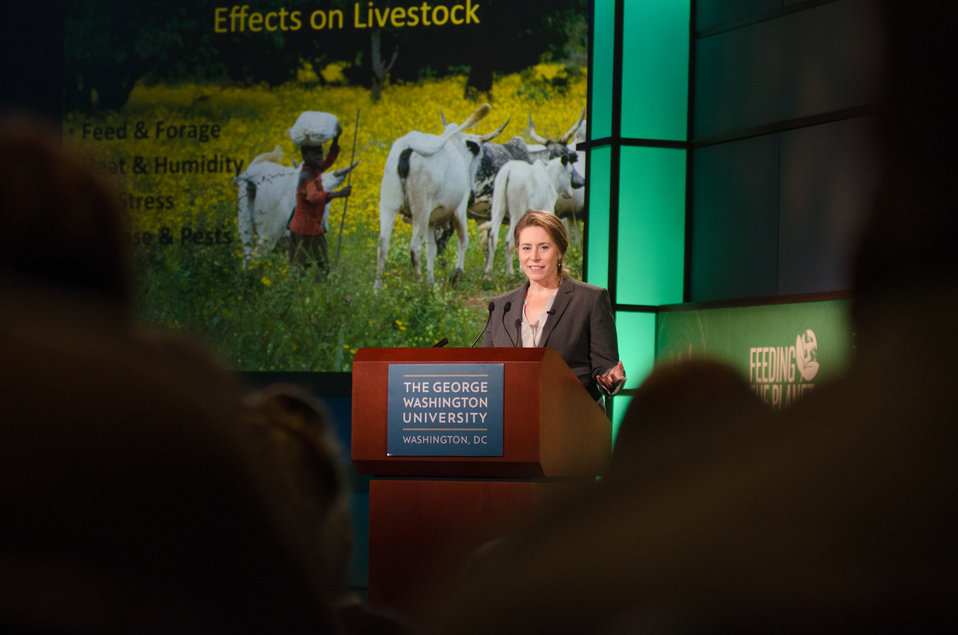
Margaret Walsh, Ph.D., Senior Ecologist Climate Change Program Office at the U.S. Department of Agriculture (USDA) speaking at the Feeding the Planet Summit of leaders from agriculture, business, finance, academia, Non Governmental Organization, government and media, along with a large contingent of college students to engage around promising innovations in global agriculture and food security. The Summit spotlights transformation and scalable developments in policy, practices and technologies with special attention to related issues of gender, climate change and urbanization at The George Washington University in Washington, DC, on Wednesday, Oct. 31, 2013.